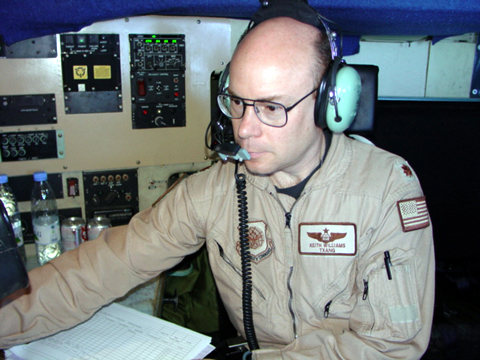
Marking the way

TALLIL AIR BASE, Iraq -- Maj. Keith Williams plots the route his C-130 Hercules is taking during an airlift mission from here to Kuwait. Major Williams is a navigator with the 328th Expeditionary Airlift Squadron.